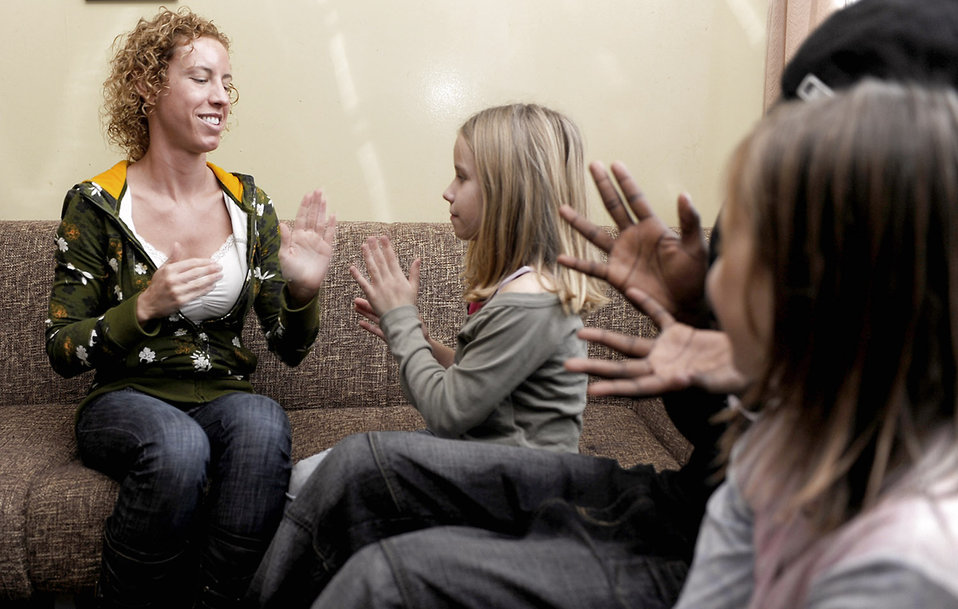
Airmen reach out to children's home in Lithuania

Staff Sgt. Elizabeth Spradley plays a new version of patty-cake with one of the children Nov. 15 at the District Vijurkai Children's Home in Vijurkai, Lithuania. The children in the home range from 3 to 17 years old and will be celebrating Christmas with Airmen from Royal Air Force Lakenheath, England. Sergeant Spradley is a 493rd Expeditionary Fighter Squadron explosive ordnance disposal member.